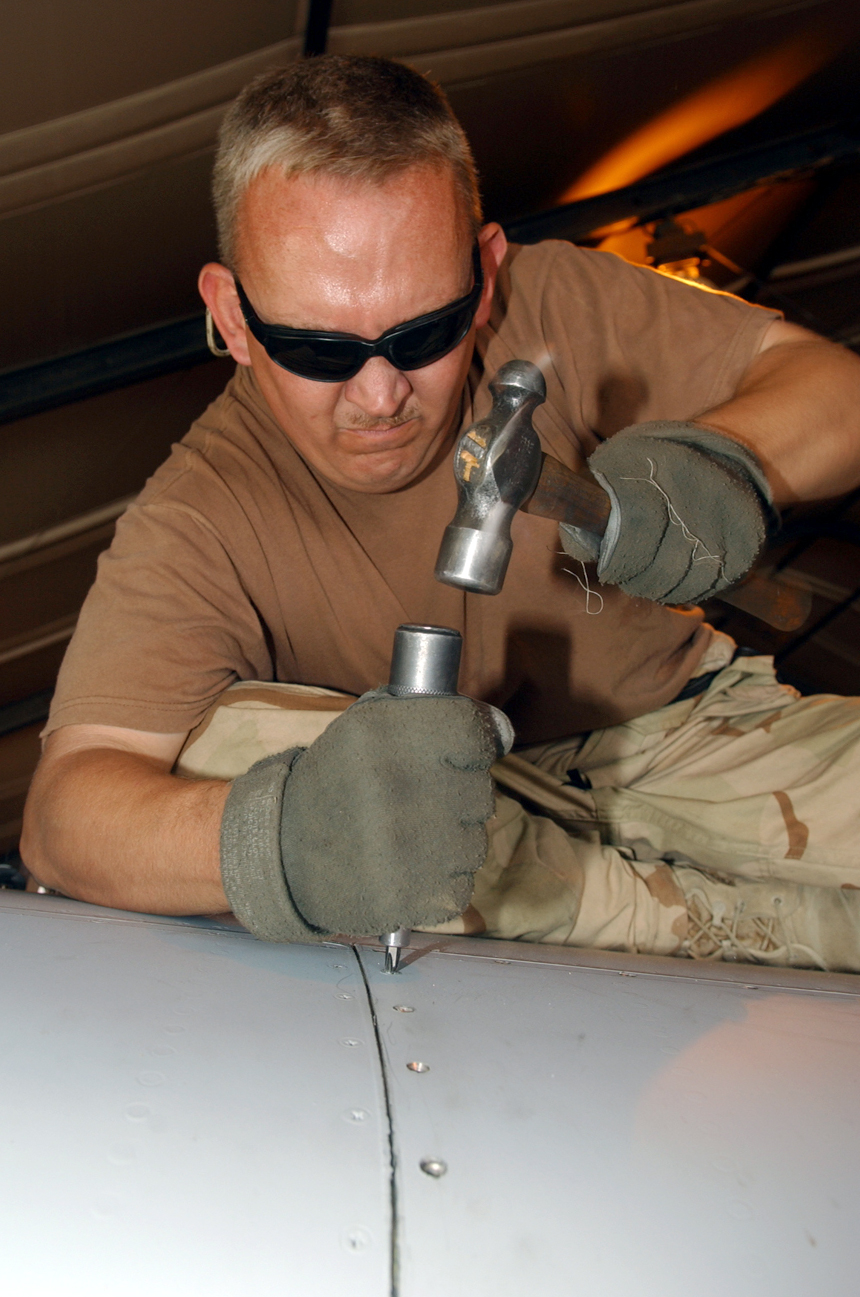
BAGRAM AIR BASE, Afghanistan -- Tech. Sgt. Richard Richardson hammers out a rivet in an A-10 Thunderbolt II leading edge panel. Each A-10 here is taken apart after 400 flying hours so maintainers can perform preventative maintenance. Sergeant Richardson is assigned to the 355th Expeditionary Aircraft Maintenance Squadron.